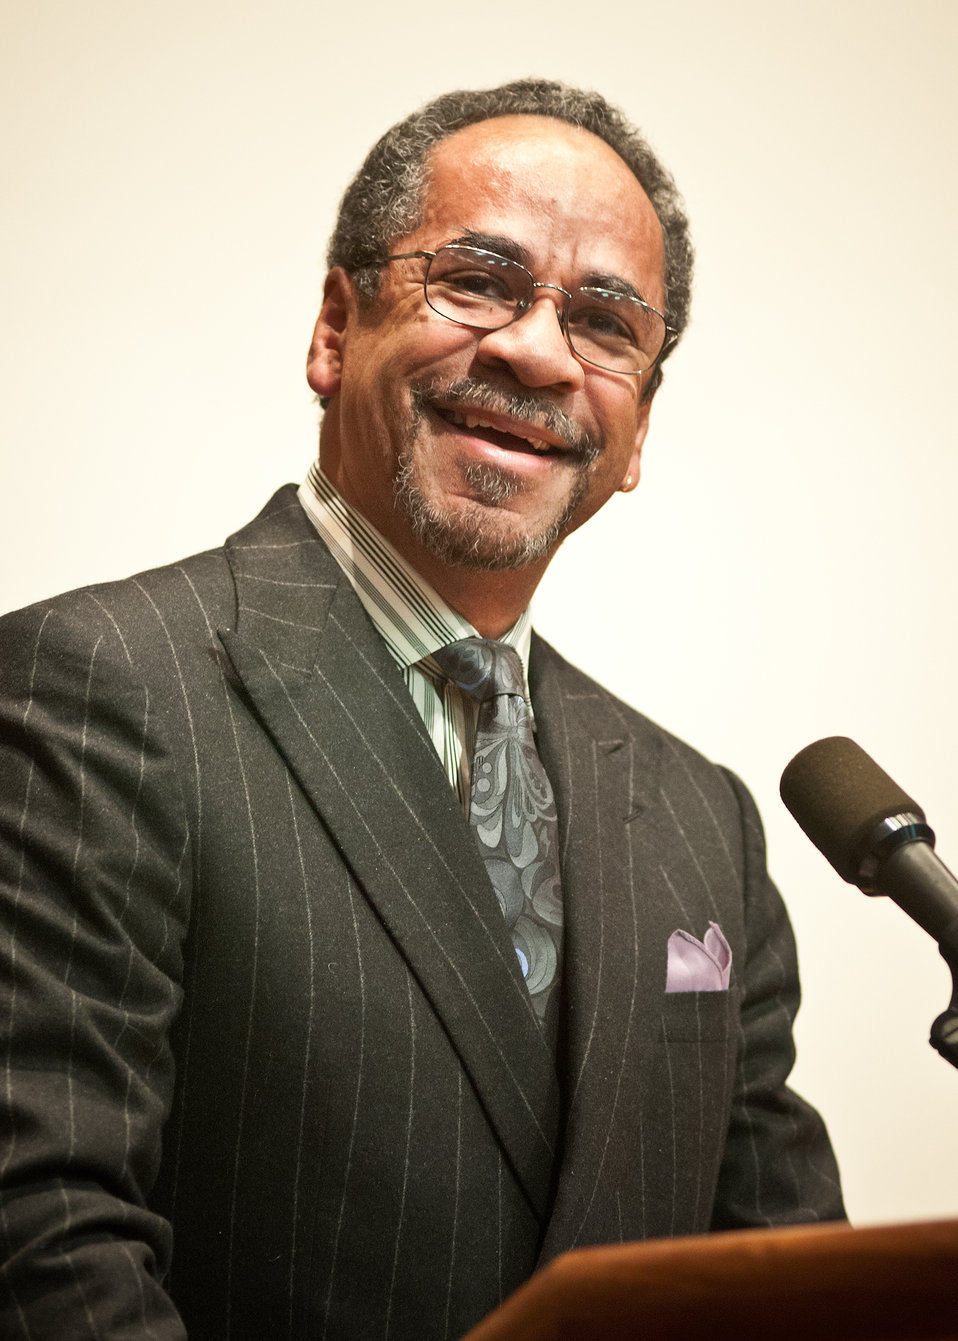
Tim Reid Actor, Comedian, Filmmaker and Social Activist was the guest speaker at the United States Department of Agriculture Black History Month celebration “Black Women in American Culture and History” in Washington, D.C. on Thursday, February 16, 2012. Reid spoke of the importance of women in his family, life and of the contributions of Black women to American history. Reid produced a documentary for USDA Cultural Transformation.